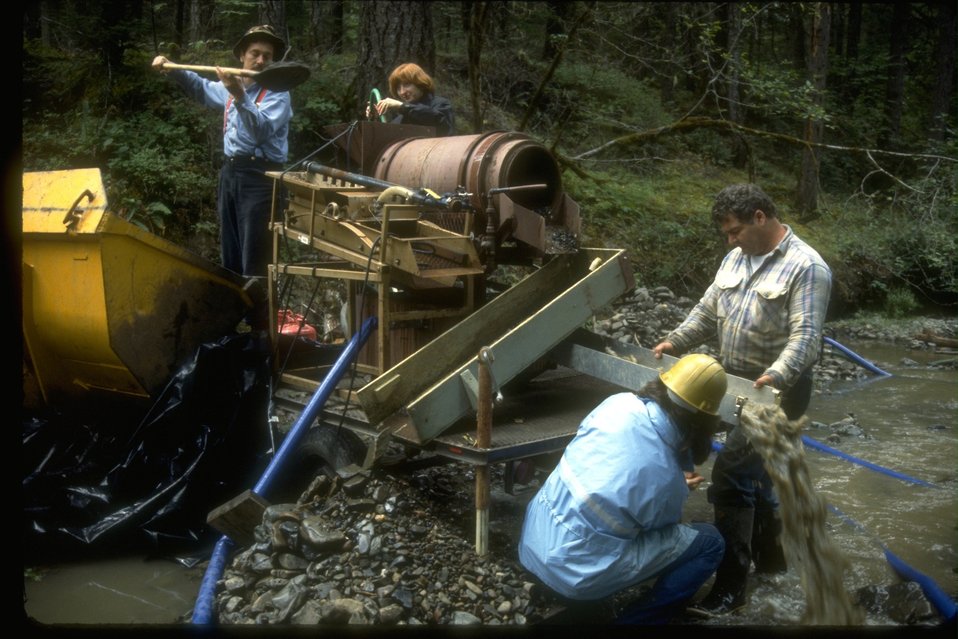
Gold Mine Claim.